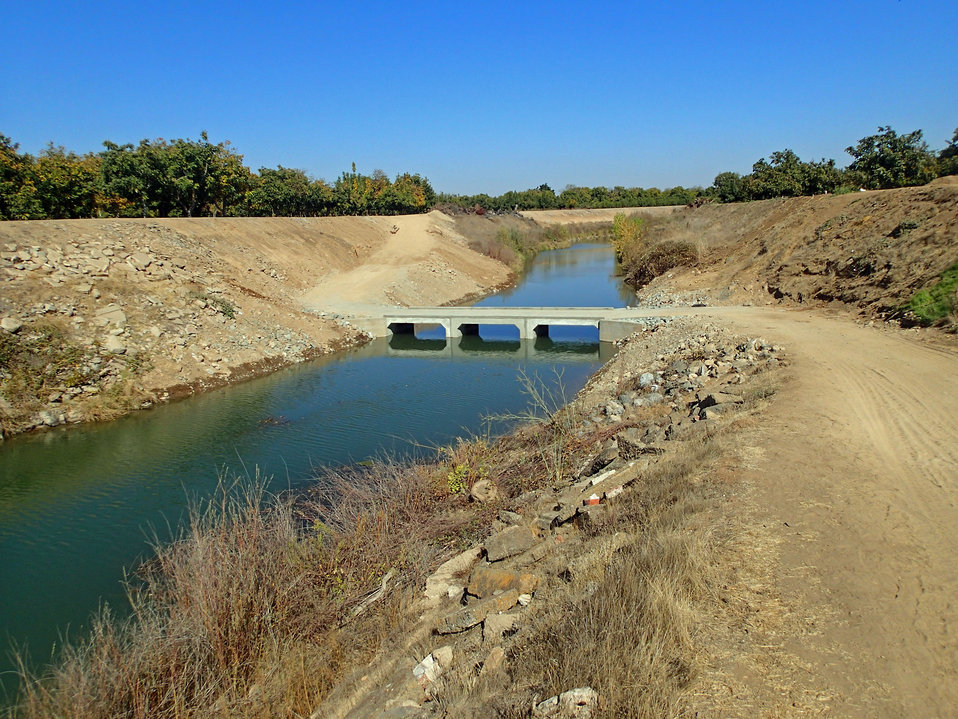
Calaveras River Fish Passage Project

located on Mormon Slough, a channel of the Calaveras River east of Stockton, CA